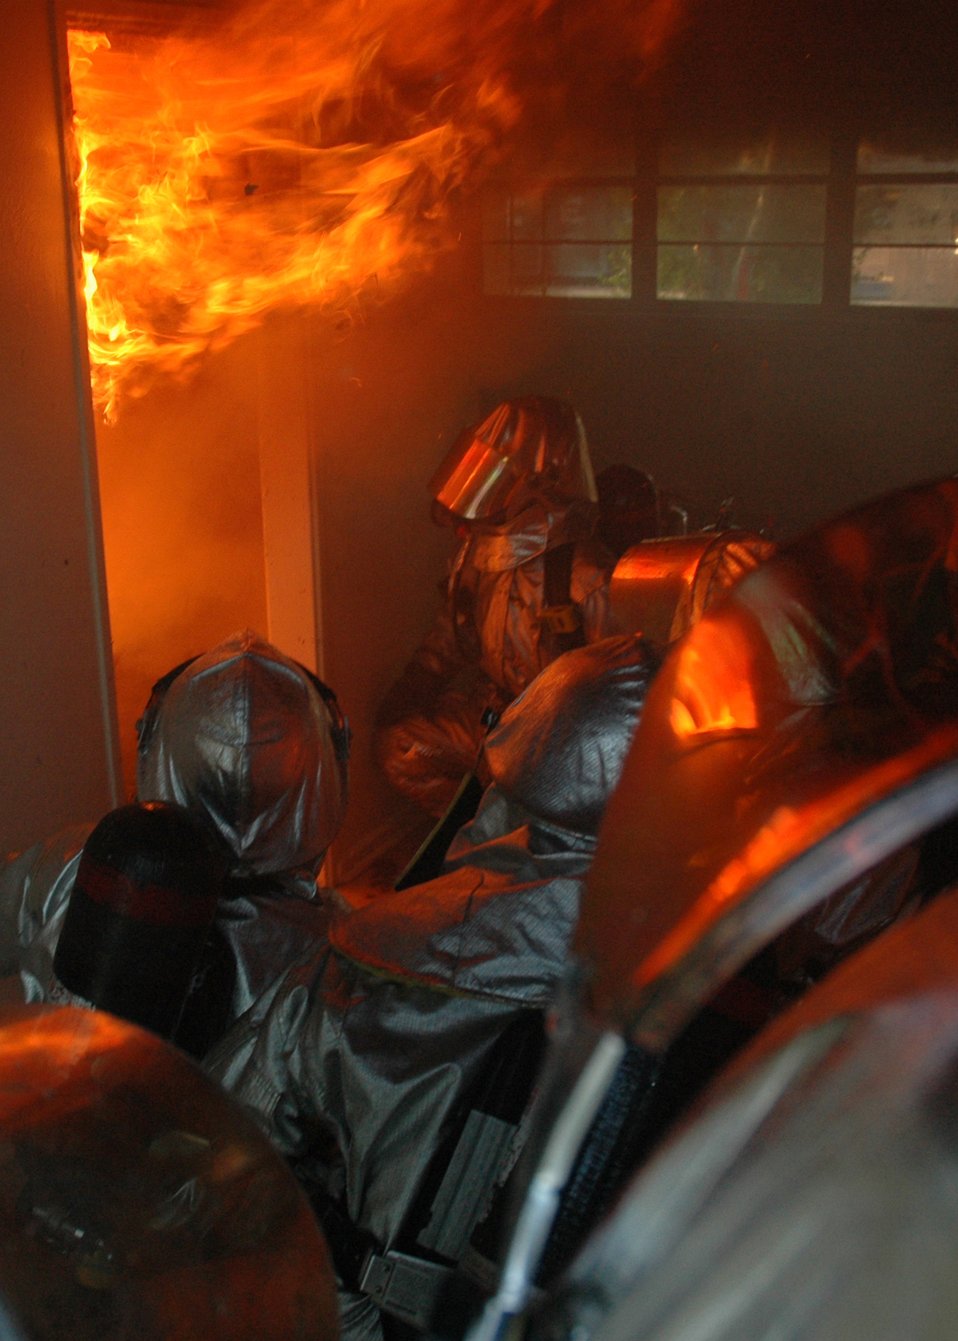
Air Force firefighters fuel flames for live fire training

During a training exercise June 20, firefighters at Eglin Air Force Base, Fla., wait for a kitchen fire to reach its peak to see how it will react. The 96th Civil Engineer Squadron members had the chance to experience the flames in a controlled scenario, as part of a unique